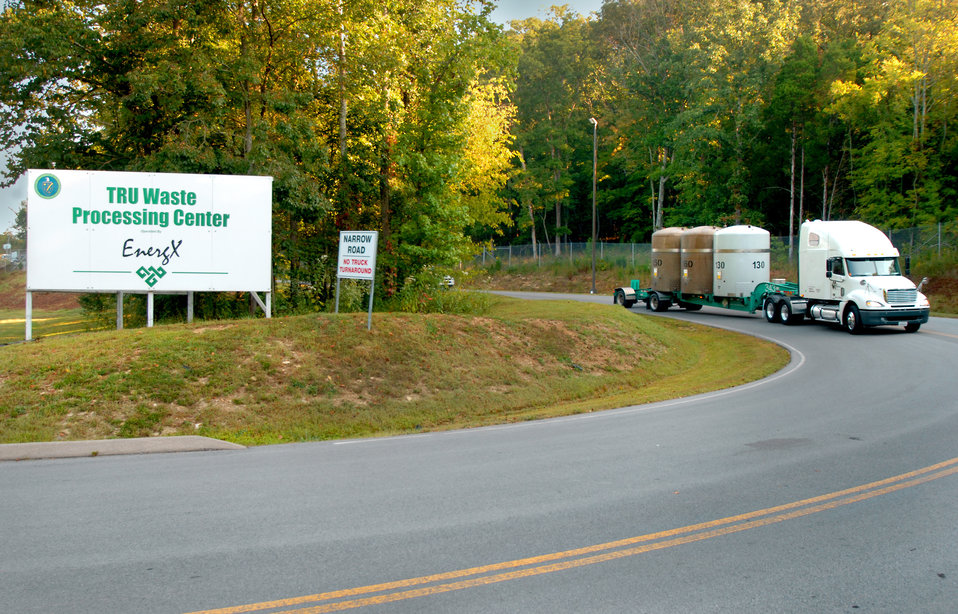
Recovery Act Funding Leads to Record Year for Transuranic Waste Shipments

A shipment of contact-handled transuranic waste makes its way to the Waste Isolation Pilot Plant.

2010 ---
With the help of American Recovery and Reinvestment Act funding, the Waste Isolation Pilot Plant (WIPP) received the highest number of transuranic waste shipments in a single year since waste operations began there in 1999.
The 1,194 shipments WIPP received for safe, permanent disposal in 2010 beats a previous record of 1,144 shipments in 2006.
The Recovery Act accelerated the cleanup of transuranic waste generated by past U.S. defense activities at several sites across the DOE complex.